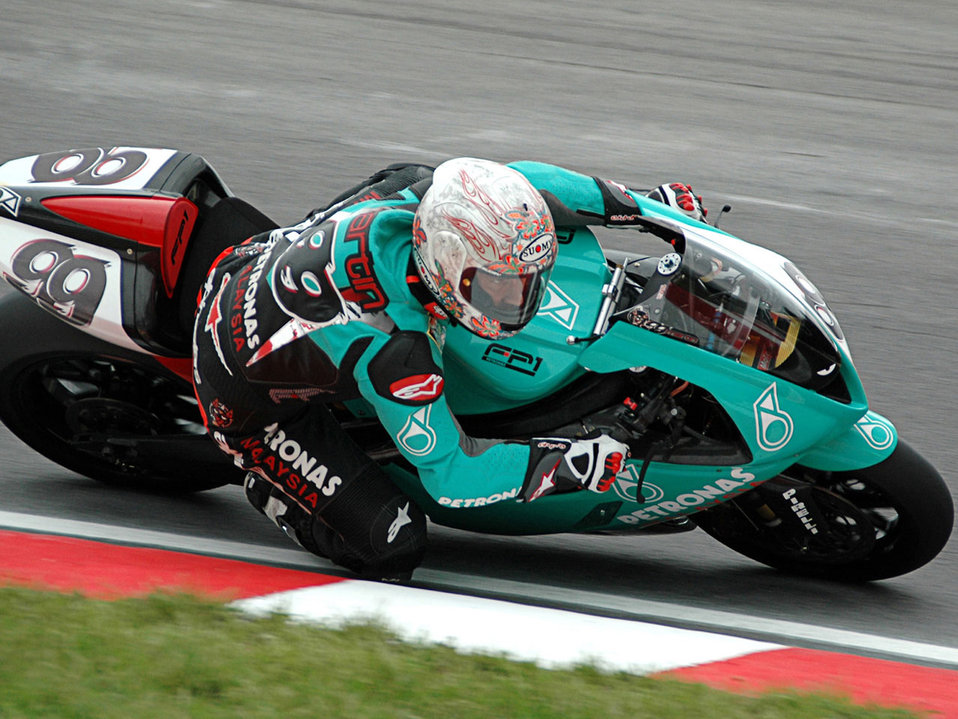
Steve martin motorcycle racer

Steve martin on a 900cc foggy petronas world superbike racer at druids hill bend at brandshatch in 2005.